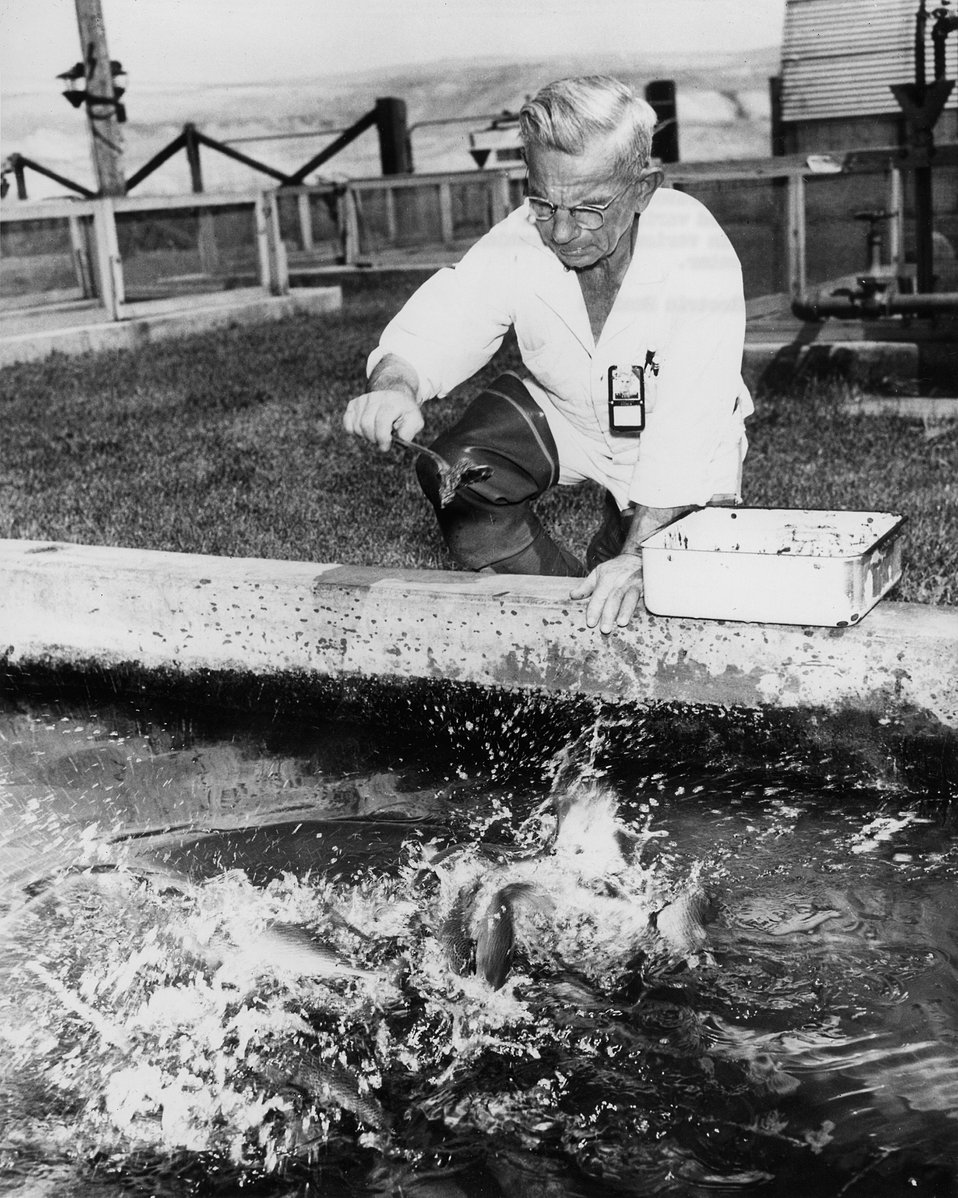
Rainbow trout are raised to supply eggs for experiments in the Hanford aquatic biology laboratory. c. 1960